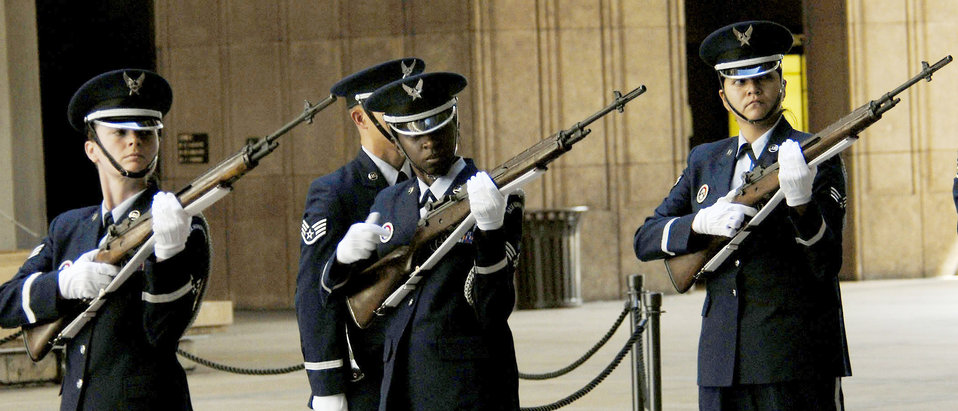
Hawaii officials honor fallen war heroes

Members of Joint Base Hickam-Pearl Harbor, Hawaii, honor guard perform a rifle volley to honor 28 fallen servicemembers being presented the Hawaii Medal of Honor posthumously during a special ceremony March 23, 2010, in Honolulu, Hawaii. The Hawaii Medal of Honor was created in 2005 to recognize the heroism of those members of the U.S. armed forces with links to Hawaii who are killed in action while serving our country as part of Operation Iraqi Freedom and Operation Enduring Freedom in Iraq and Afghanistan.